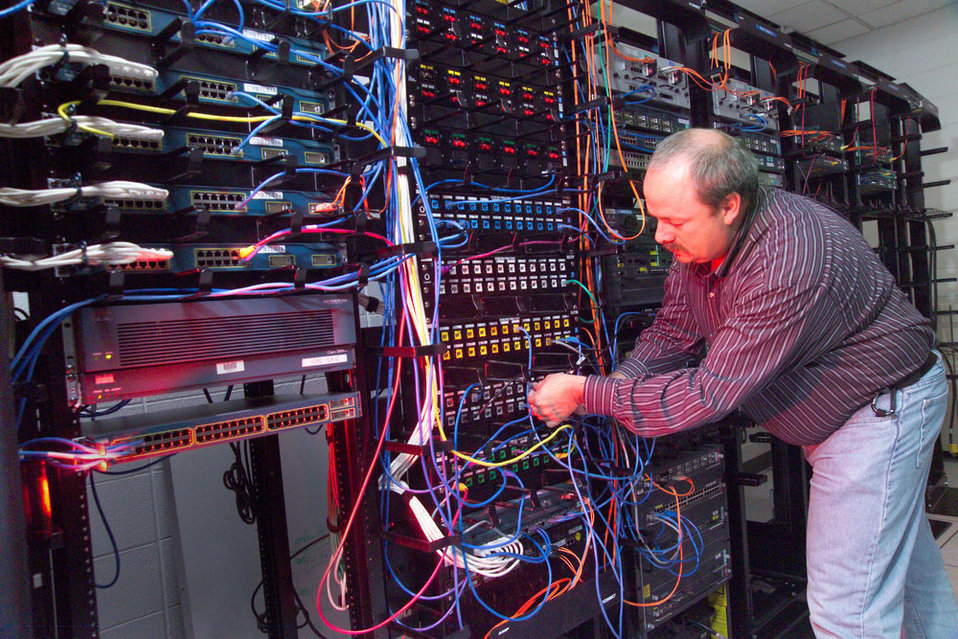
Idaho National Laboratory is using iron's bandwidth to connect Idaho universities with the lab's data center for high-performance computing.